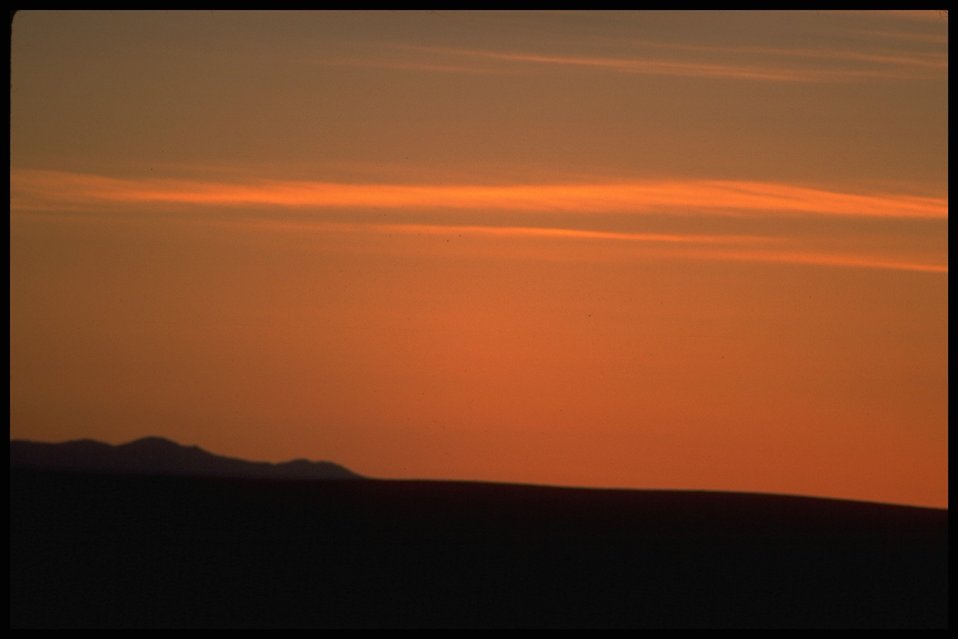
Lakeview District sunset.